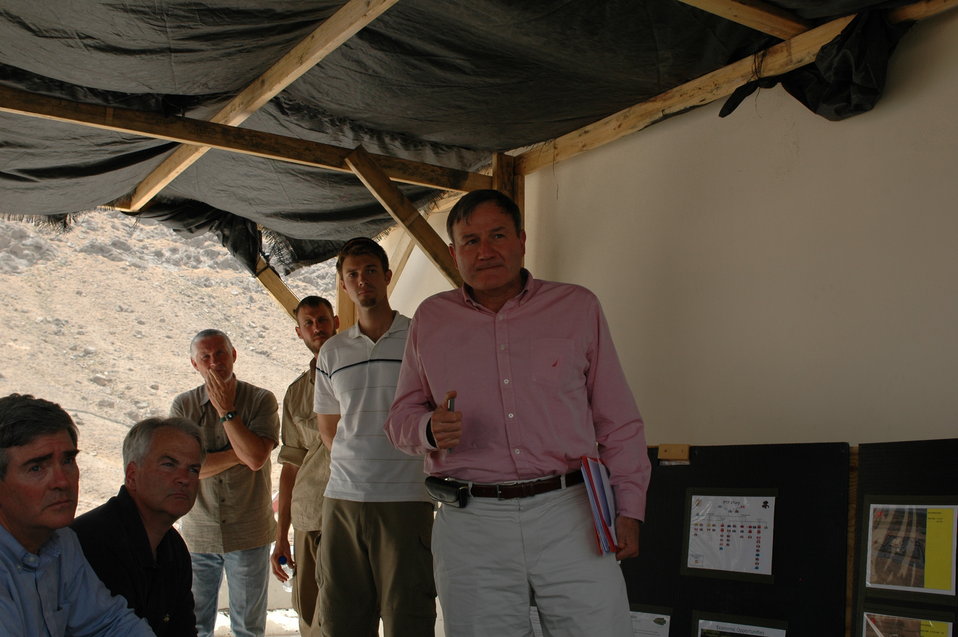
CODEL Berman